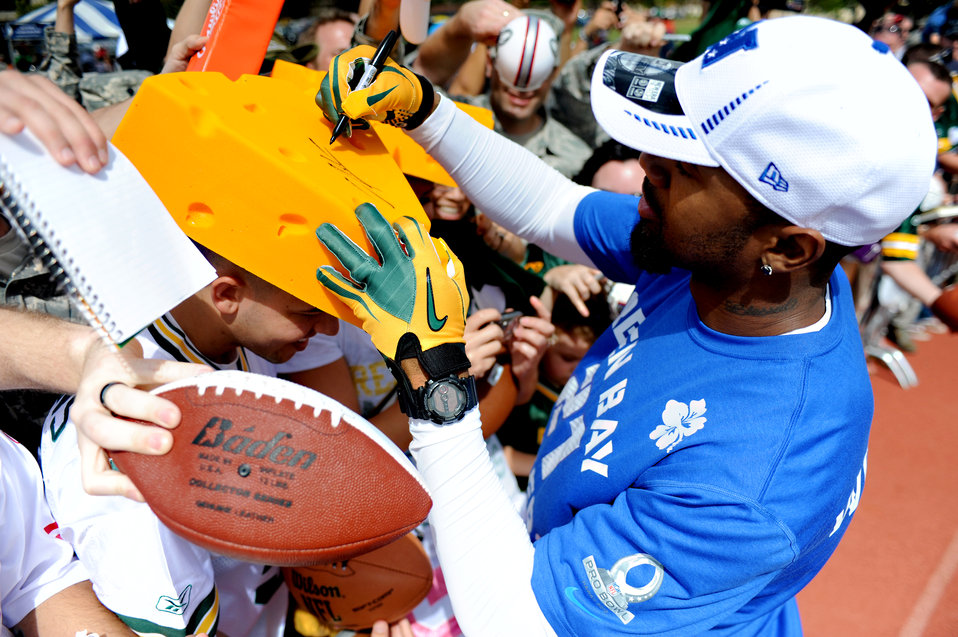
Say cheese

Charles Woodson, a Green Bay Packers cornerback, signs a